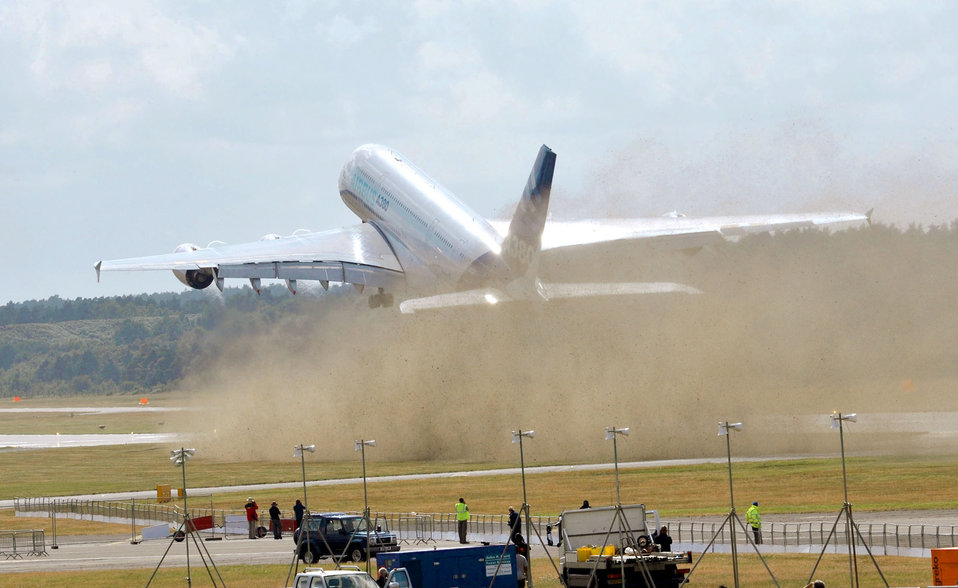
Farnborough International Air Show highlights servicemembers, aircraft

An Airbus A380 takes off to perform a demonstration for spectators July 19, 2010, during the Farnborough International Air Show in Farnborough, England.